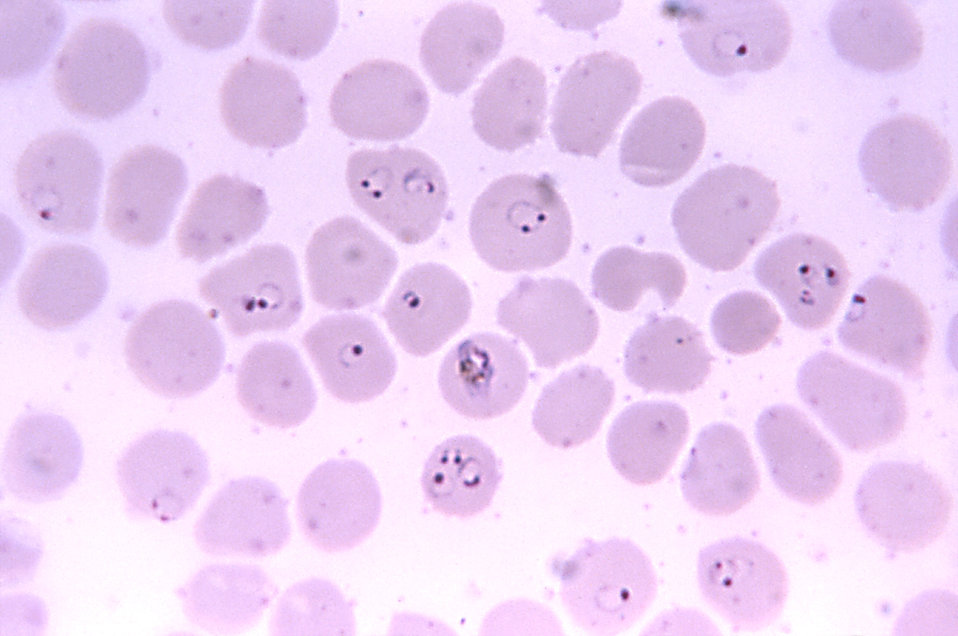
This micrograph revealed a number of P. falciparum rings, and a growing trophozoite; Mag. 1125X.